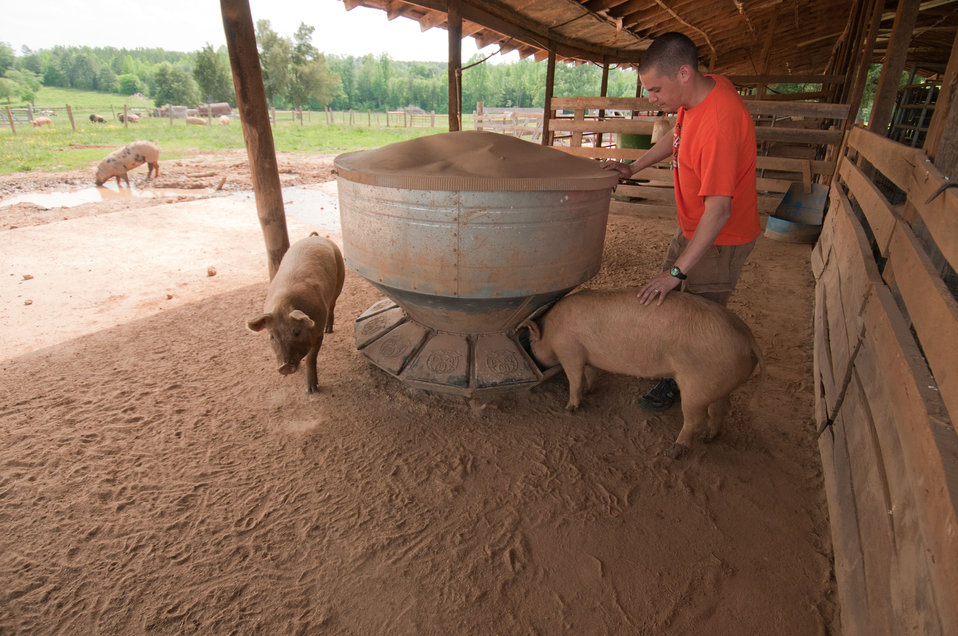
3rd generation farmer CJ Isbell takes pride in in the pork products he produces at Keenbell Farm, Rockville, VA, on Friday, May 6, 2011. The farm was established in 1951. Business has been very good for farmers with pasture raised pigs. Isbell finds it a challenge to expand fast enough to meet demands. Keenbell Farms pork products range from sausage, to bacon, pork chops, roasts, bratwurst, and many more in his onsite sales room and the Fall Line Farms food hub that offer a wide variety of household food staples and specialty items. Members can pick their customized orders from an ever changing inventory of fruits, vegetables, meats, soaps, eggs, cheeses, flowers, honey, pastas, sauces, syrups, baked goods, mushrooms, flour and grains. Suppliers post what they have to sell on Lulus Local Food online listing where customers can make their selection. Every Thursday, suppliers team up to deliver customized orders to, one of several pick-up points, designated by the customer in or around the Richmond, VA area.